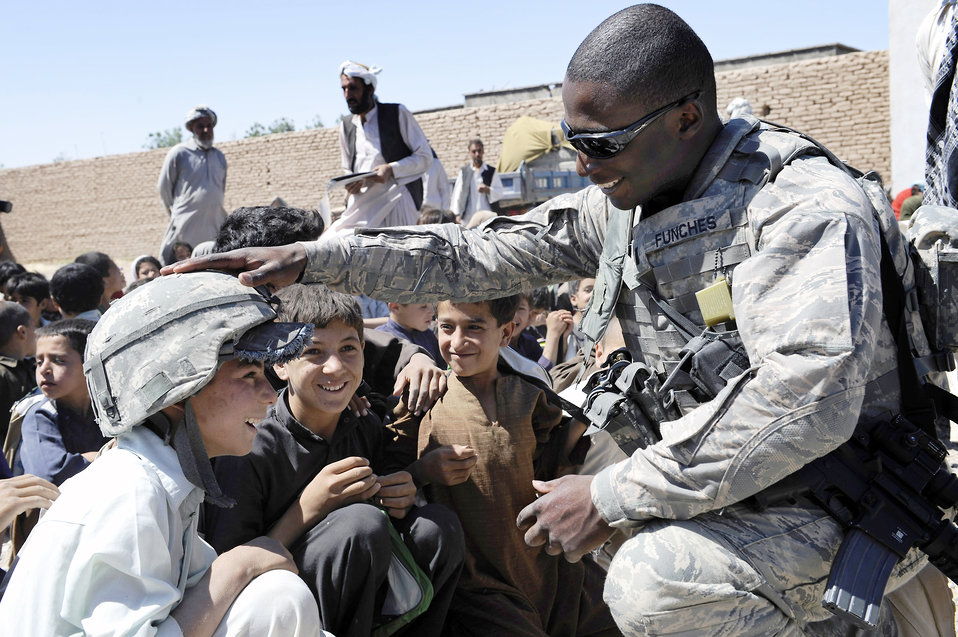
It's too big for you

At Rhey Village near Herat, Afghanistan, 1st Lt. Etan Funches lets an Afghan boy try on his helmet, Sept. 2, 2009. Lieutenant Funches is deployed to nearby Camp Stone from Schriever Air Force Base, Colo.